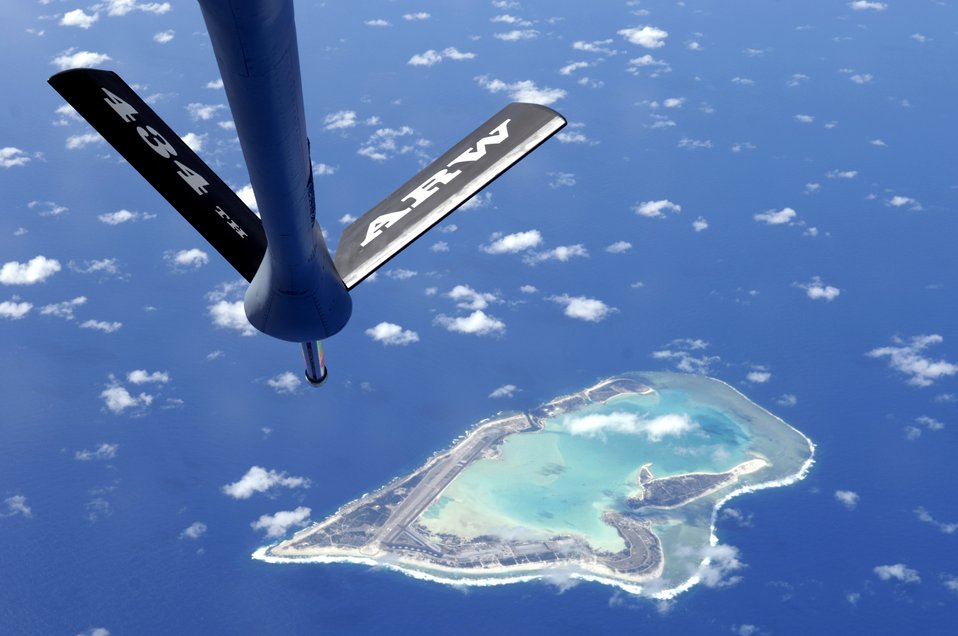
Fuel for the Pacific

A boom from a KC-135 Stratotanker is visible as it flies Dec. 15 over Wake Island. The KC-135 is from the 74th Air Refueling Squadron, part of the 434th Air Refueling Wing from Grissom Air Force Reserve Base, Ind. Wake Island was devastated by 185 mile per hour winds and a storm surge caused by Super Typhoon Ioke in August of this year.